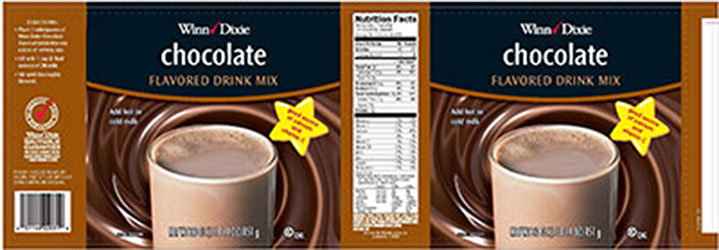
RECALLED – Instant Chocolate Drink Mix

January 12, 2014 – Product Recall – Winn-Dixie Recalls Instant Chocolate Drink Mix Sold in Florida.